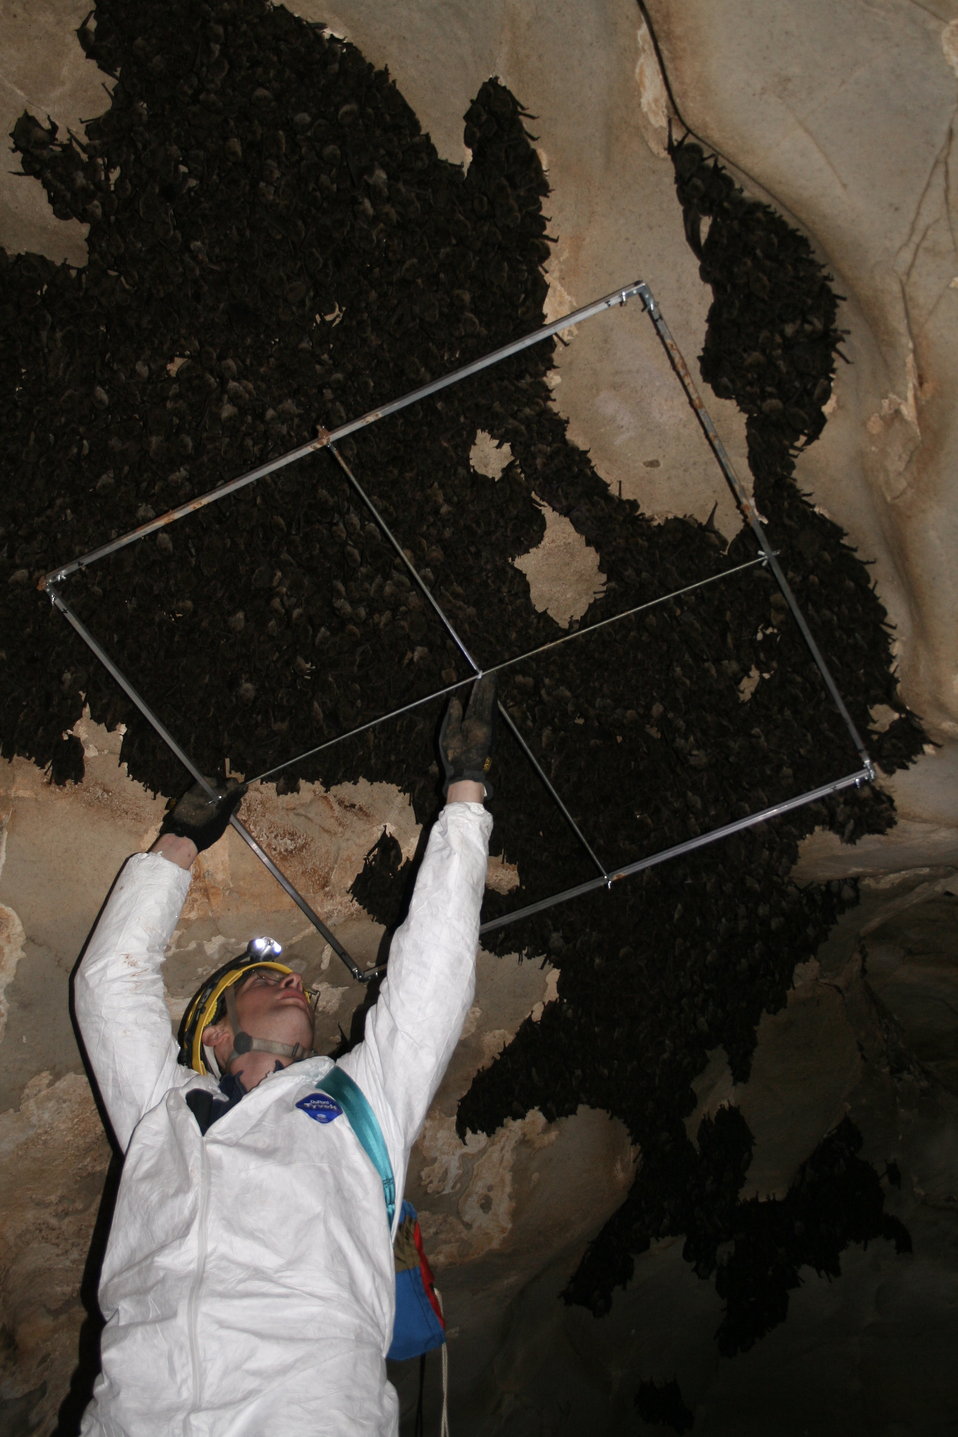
Researcher counting gray bats

Researcher places meter-square grid used to estimate cluster density.